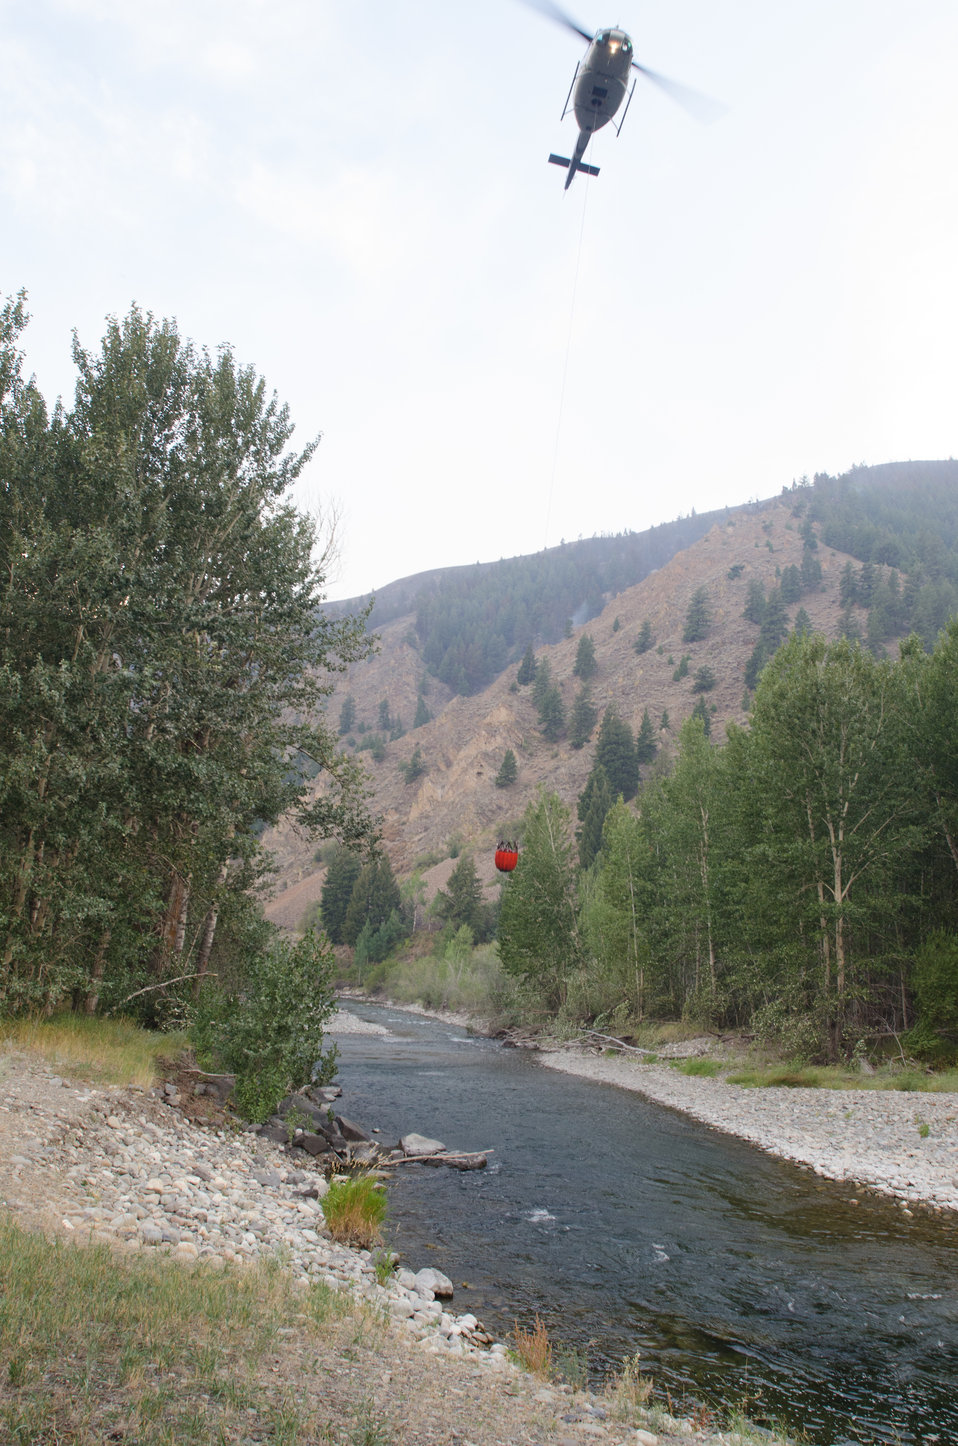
A Bell UH-1H helicopter lifts a full Bambi Bucket, a collapsible water bucket utilizing a pilot-controlled release valve, that is able to deliver a concentrated column of water from the helicopter to the fire on the Carbonate Ridge, rising behind the Wood River, during Beaver Creek Fire, west of Hailey, ID, on Monday, Aug 19, 2013.